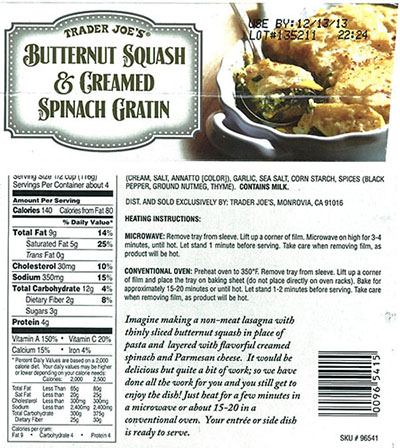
RECALLED - Butternut Squash and Creamed Spinach Gratin

December 2, 2013 – Product Recall – Huxtable’s Kitchen Issues Voluntary Allergy Alert on Undeclared Allergens in Butternut Squash & Creamed Spinach Gratin.